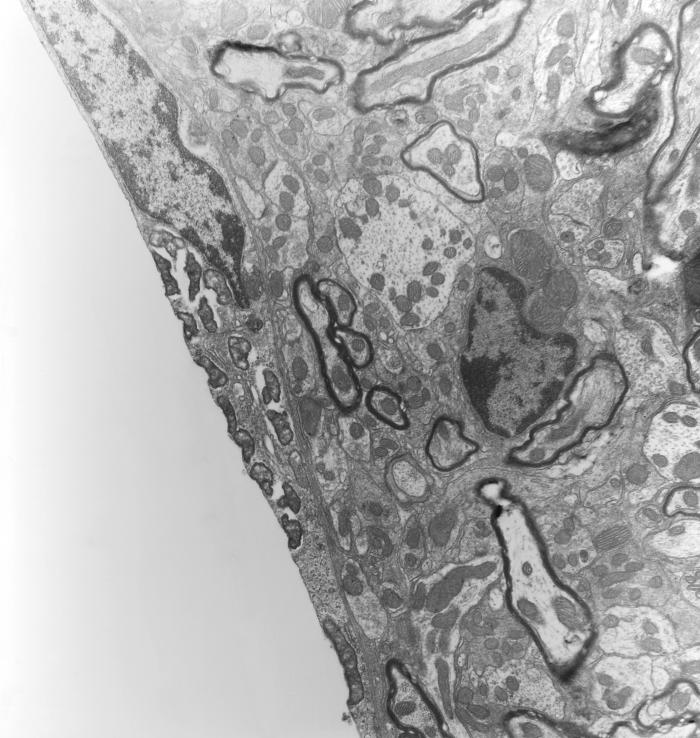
This 1978 transmission electron micrograph (TEM) depicted a brain capillary of mouse that had been experimentally infected intravenously with Orientia tsutsugamushi rickettsial micro-organisms. In this micrographic view, a host cell endothelial cell was shown to contain many organisms free within its cytoplasm.